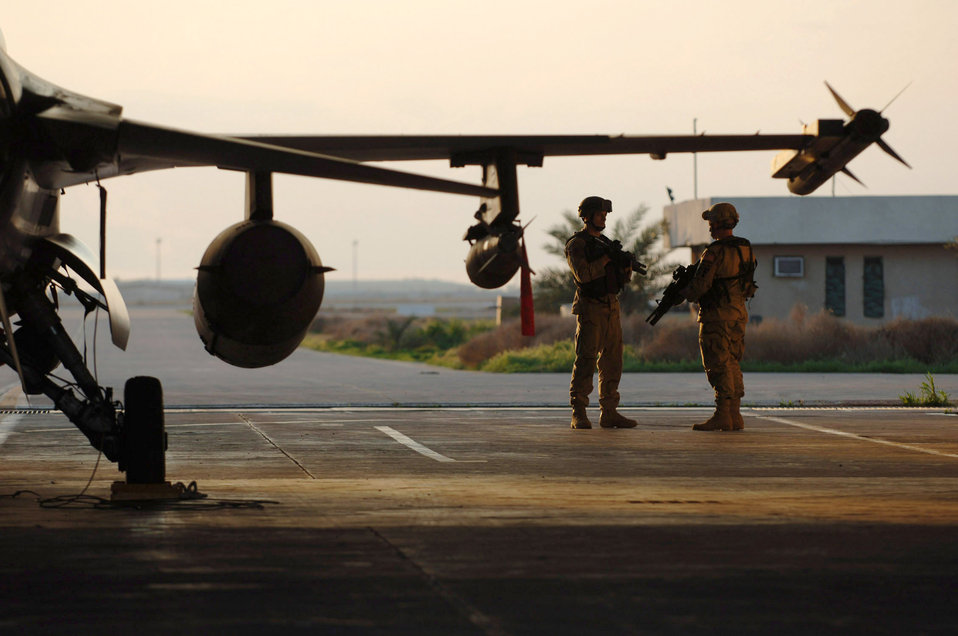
Security forces Airmen protect Iraq's combat airpower hub

Staff Sgt. Lawrence Reents and Airman 1st Class Sean Stanton perform a walking patrol near an F-16 Fighting Falcon hazardous aircraft shelter Feb. 16 at Balad Air Base, Iraq. Balad security forces patrol the airfield to gain a closer perspective of equipment and personnel. The Airmen are assigned to the 332nd Expeditionary Security Forces Squadron.